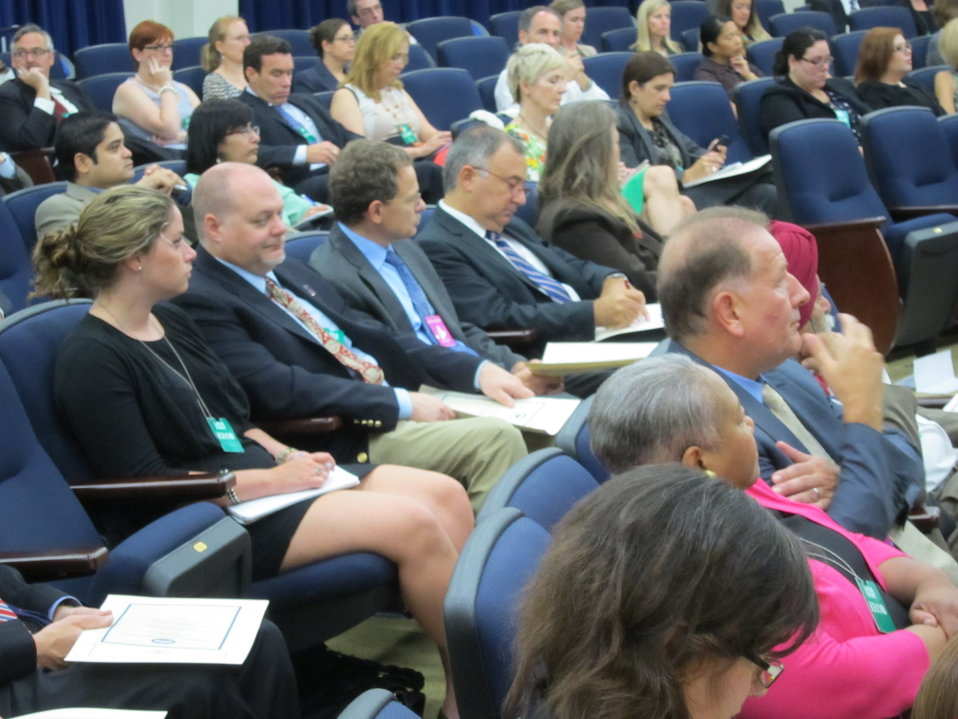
WH 2012 World Hepatitis Day Event